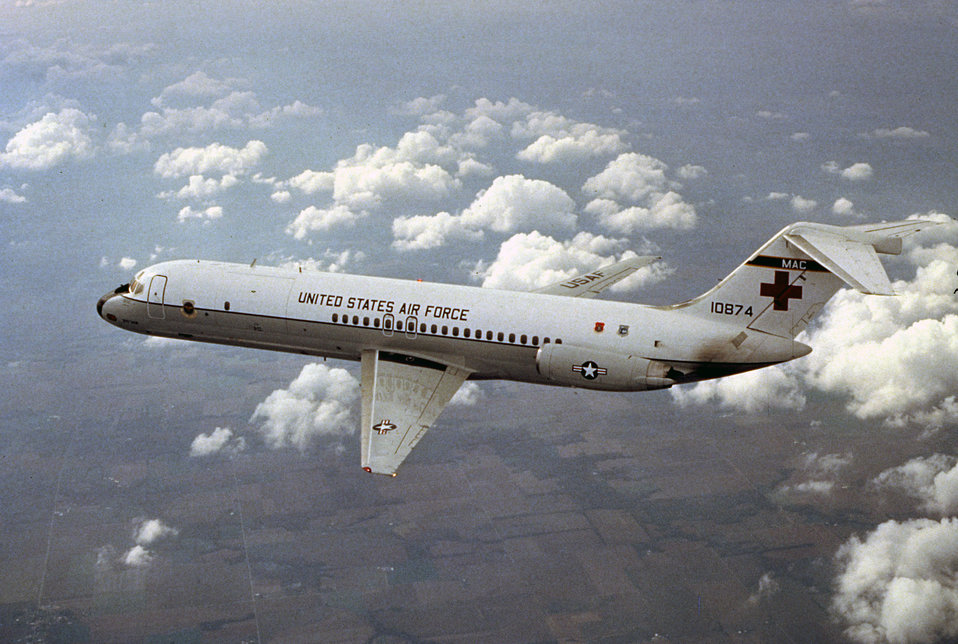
C-9 Nightingale

1960s -- The C-9 Nightingale flew special aeromedical evacuation missions. The aircraft deployed August 1968 and its medical mission was retired August 2003.